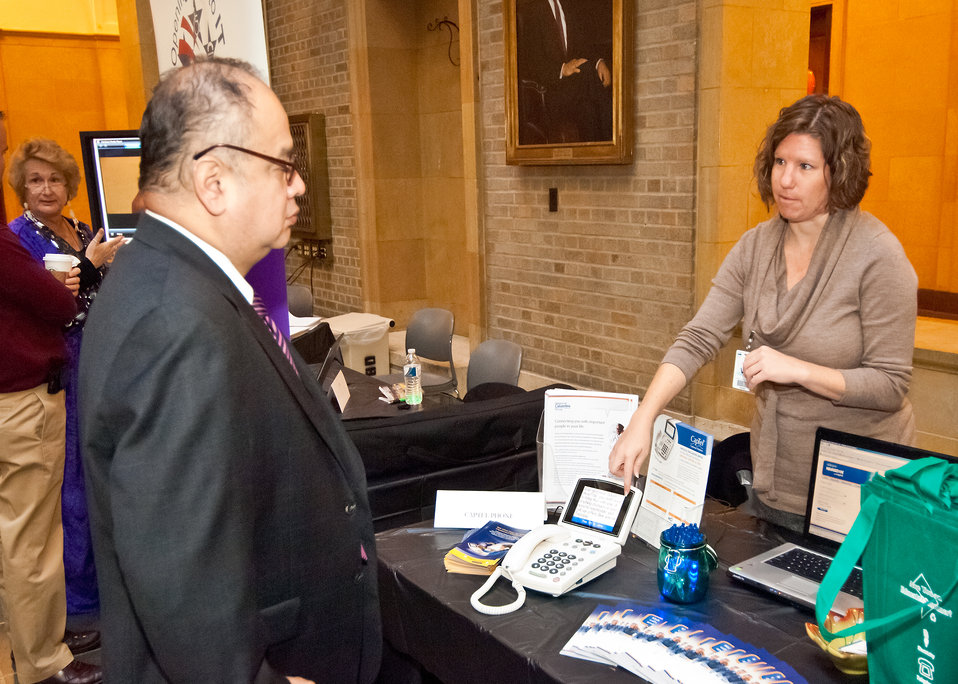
Richard Fierroz (left) listens to Lauren Cramer explain the operation of a Captel telephone, a captioned telephone service for people hard of hearing or deaf, at the U. S. Department of Agriculture (USDA) Section 508 and Disability Awareness Program in Washington, DC, on Monday, Oct. 31, 2011. Sponsored by the Office of the Chief Information Officer, the theme of the event was, “Turning the Key to Unlock and Eliminate Barriers by Providing Accessibility to All.” Section 508 applies to the development, procurement, maintenance or use of electronic and information technology allowing accessibility and awareness to promote inclusiveness to employees and the public with disabilities to information technology managed by the Federal government. Section 508 is part of the USDA’s Cultural Transformation Initiative to hire more employees with disabilities.